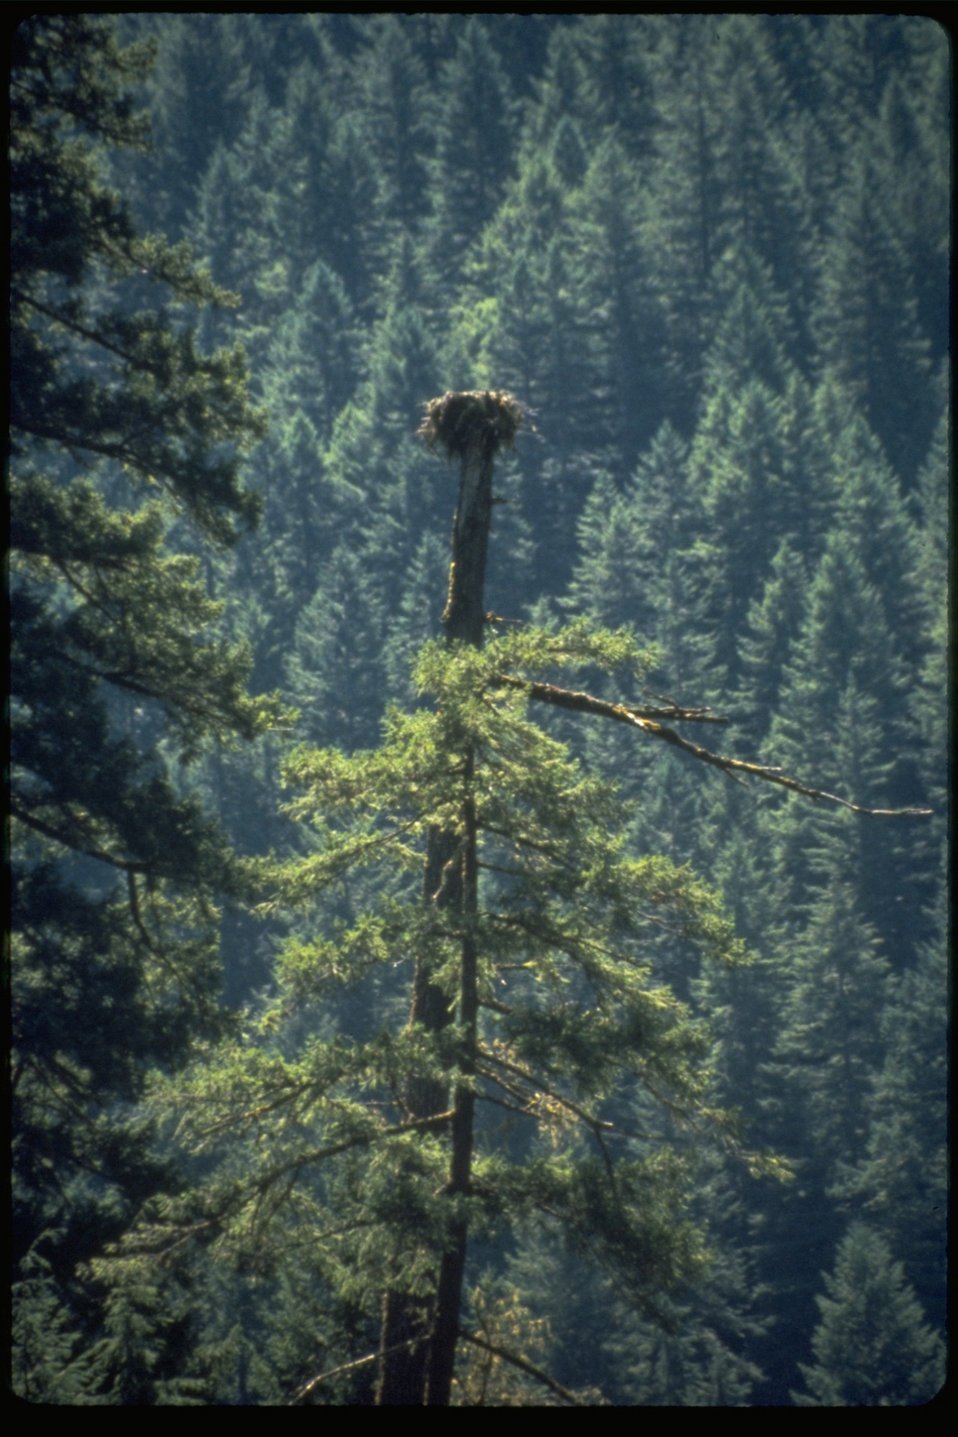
Scenic view of an eagle's nest in forest area.